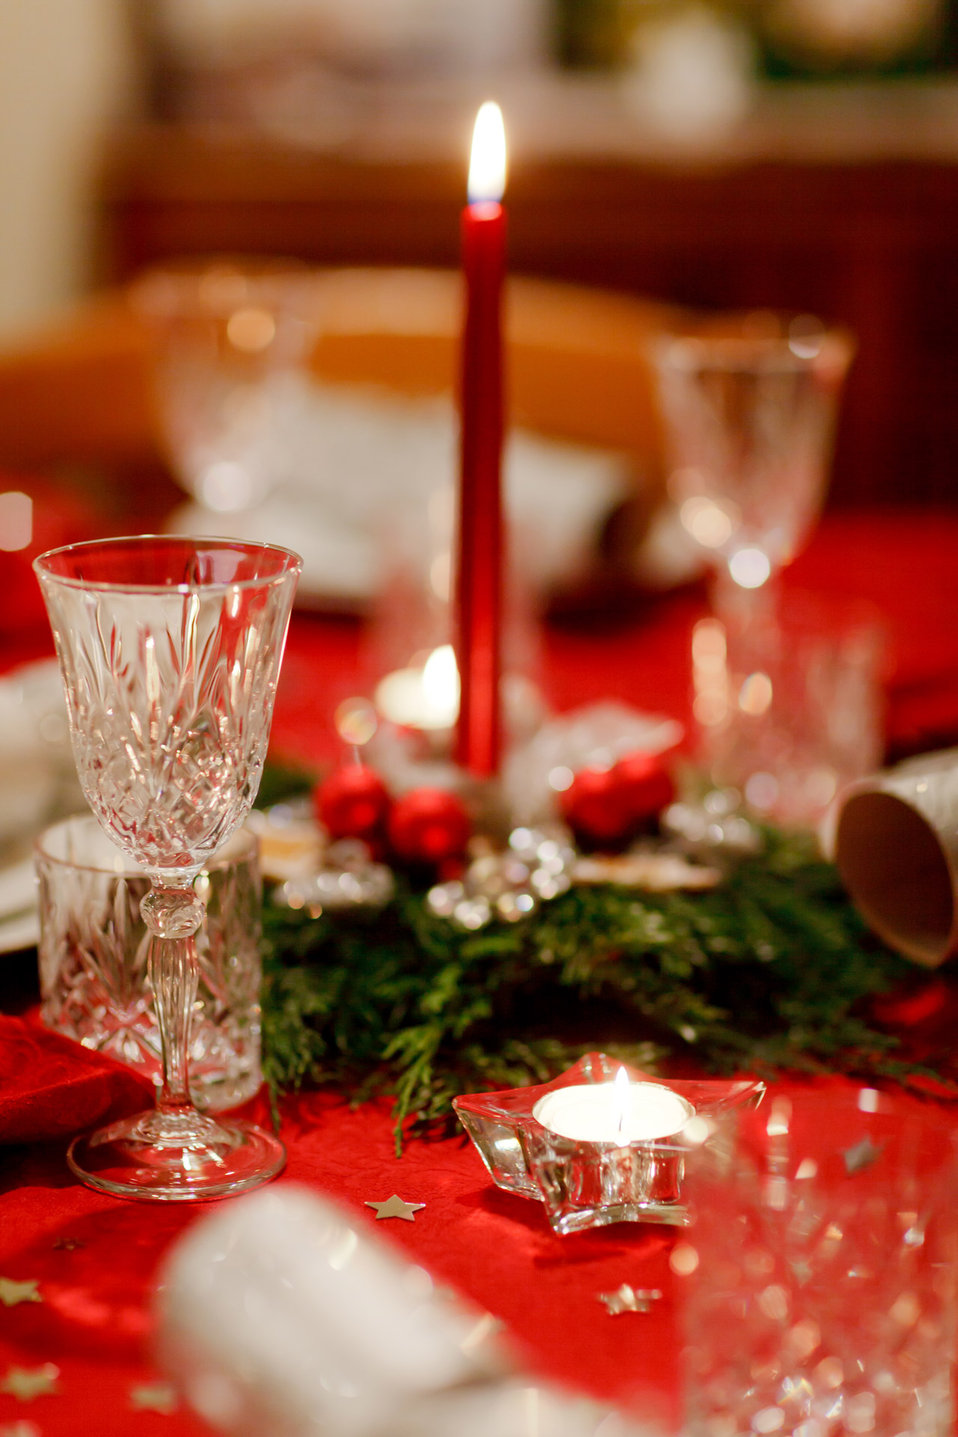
Christmas table

Christmas dining table setting.